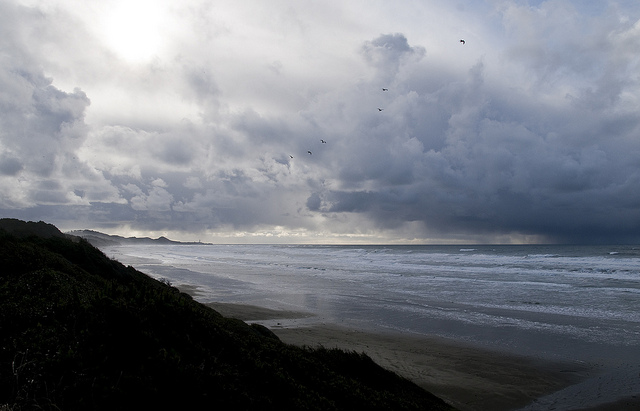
Oregon Coast National Wildlife Refuge Complex

Storm clouds approach the coast.